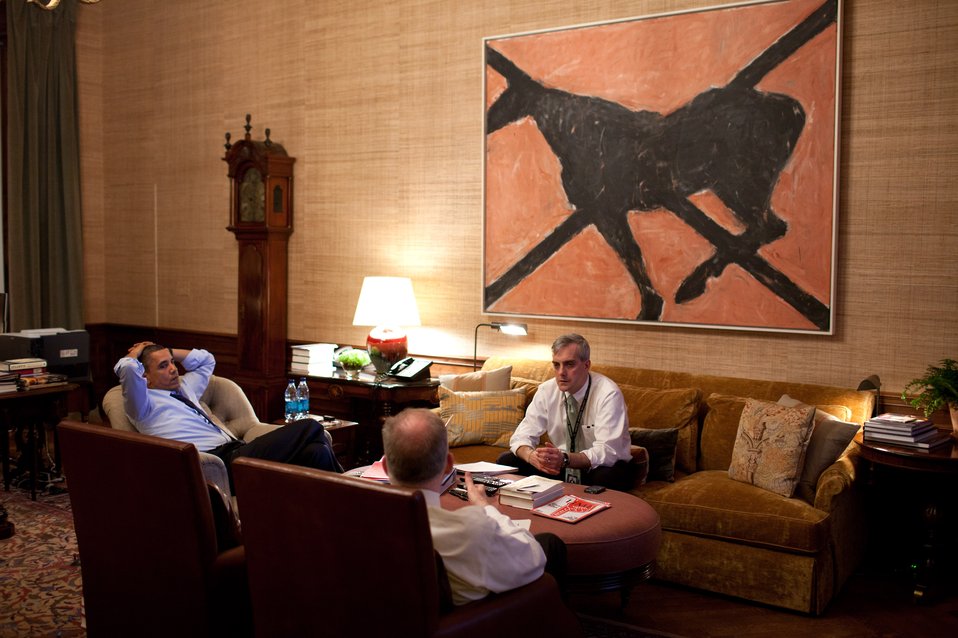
March 16, 2011
'The President meets with national security aides John Brennan, foreground, and Denis McDonough after talking on the phone with Prime Minister Naoto Kan of Japan a few days after the devastating earthquake and tsunami in Japan. The call was made near midnight from the Treaty Room office in the White House Residence. Most nights after dinner and time with his family, the President retreats to this office where he catches up on paperwork and reads his briefing material for the next day.'